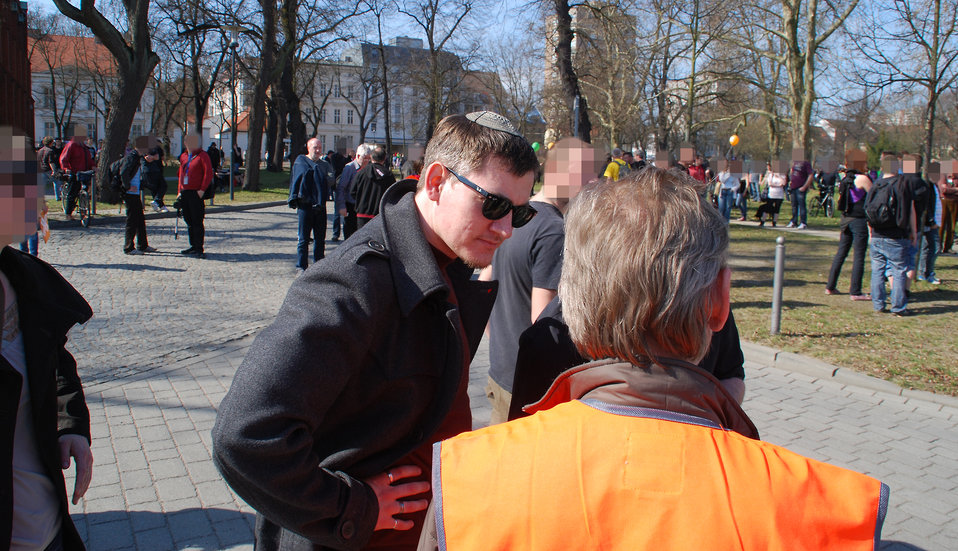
Proteste gegen den Nazi-Aufmarsch am 24.3.2012 in Frankfurt (Oder), mit Peer Jürgens, Mitglied des Landtages Brandenburg